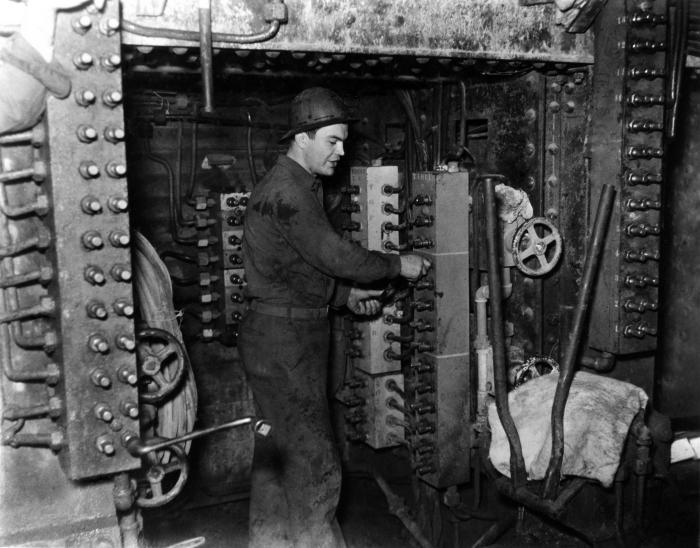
This historical image was provided by the Center for Disease Control's (CDC), National Institute for Occupational Safety and Health (NIOSH). The photograph depicted a tunnel worker inside the Queens Midtown Tunnel, in Queens, New York, while the subterranean passageway was under construction. This man was manipulating a control switchboard while wearing a protective hardhat. At the time, he was not wearing any filtered breathing mask, but it is not known from this image, as to whether or not the air quality required the use of such a mask. One might assume that this subterranean atmosphere was being monitored, and that safe levels of potentially dangerous particulates and gasses, were required to be maintained.